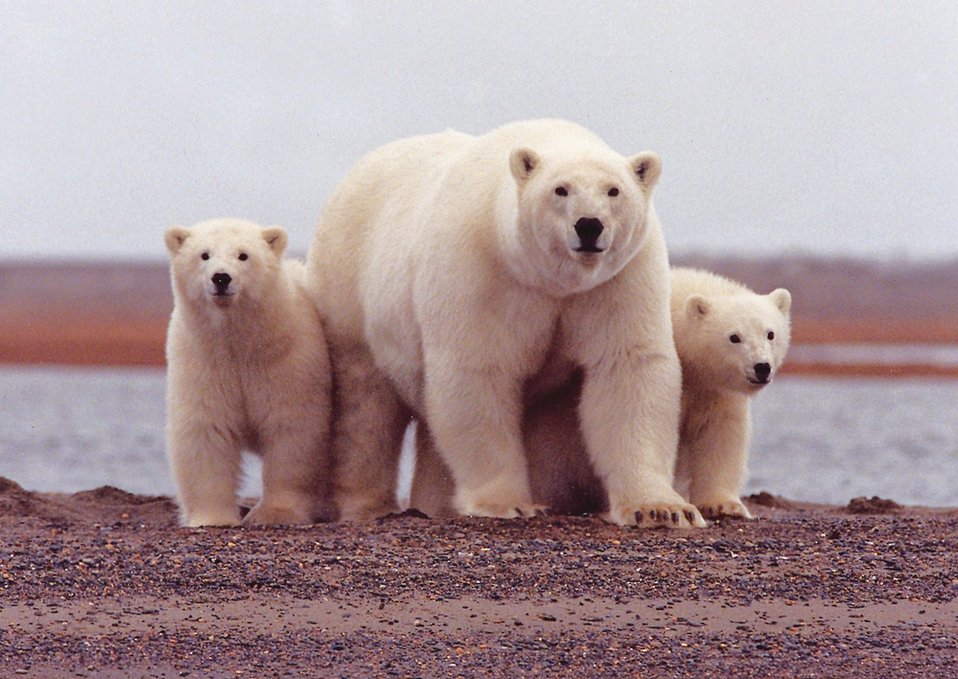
Polar bear with young, Arctic NWR

A polar bear keeps close to her young along the Beaufort Sea coast in Arctic National Wildlife Refuge.